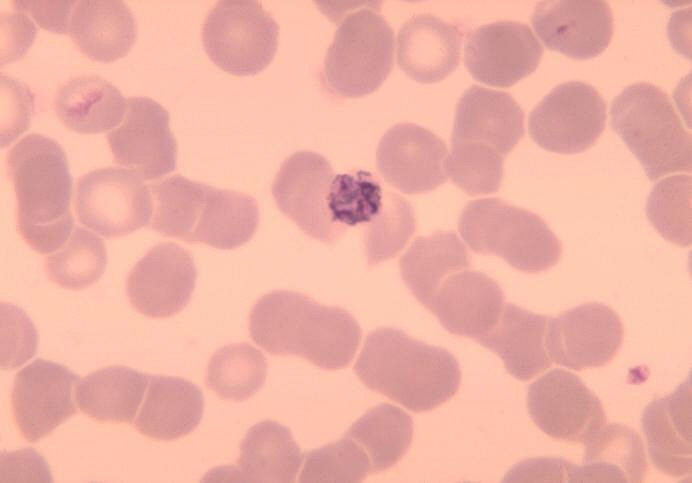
Blood smear showing old immature schizont of Plasmodium malariae.